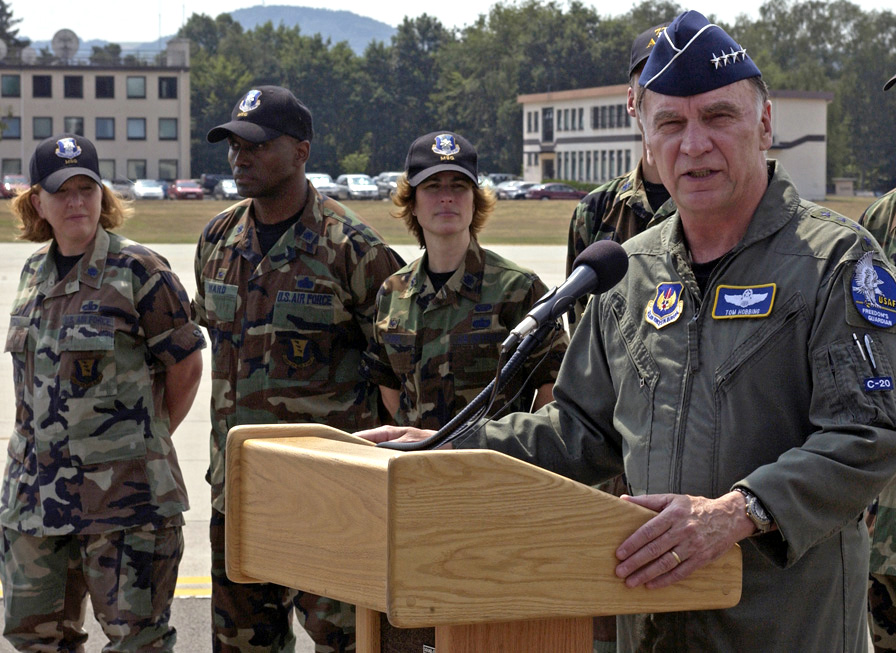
USAFE Airmen lauded for efforts in Lebanon operations

Gen. Tom Hobbins, U.S. Air Forces in Europe commander, thanks Airmen and the German government for their support at Ramstein Air Base, Germany, on July 25. General Hobbins also hosted Ambassador William R. Timken, Jr., U.S. Ambassador to Germany, who visited Ramstein on behalf of President George Bush, thanking the troops for their support with the current humanitarian efforts.